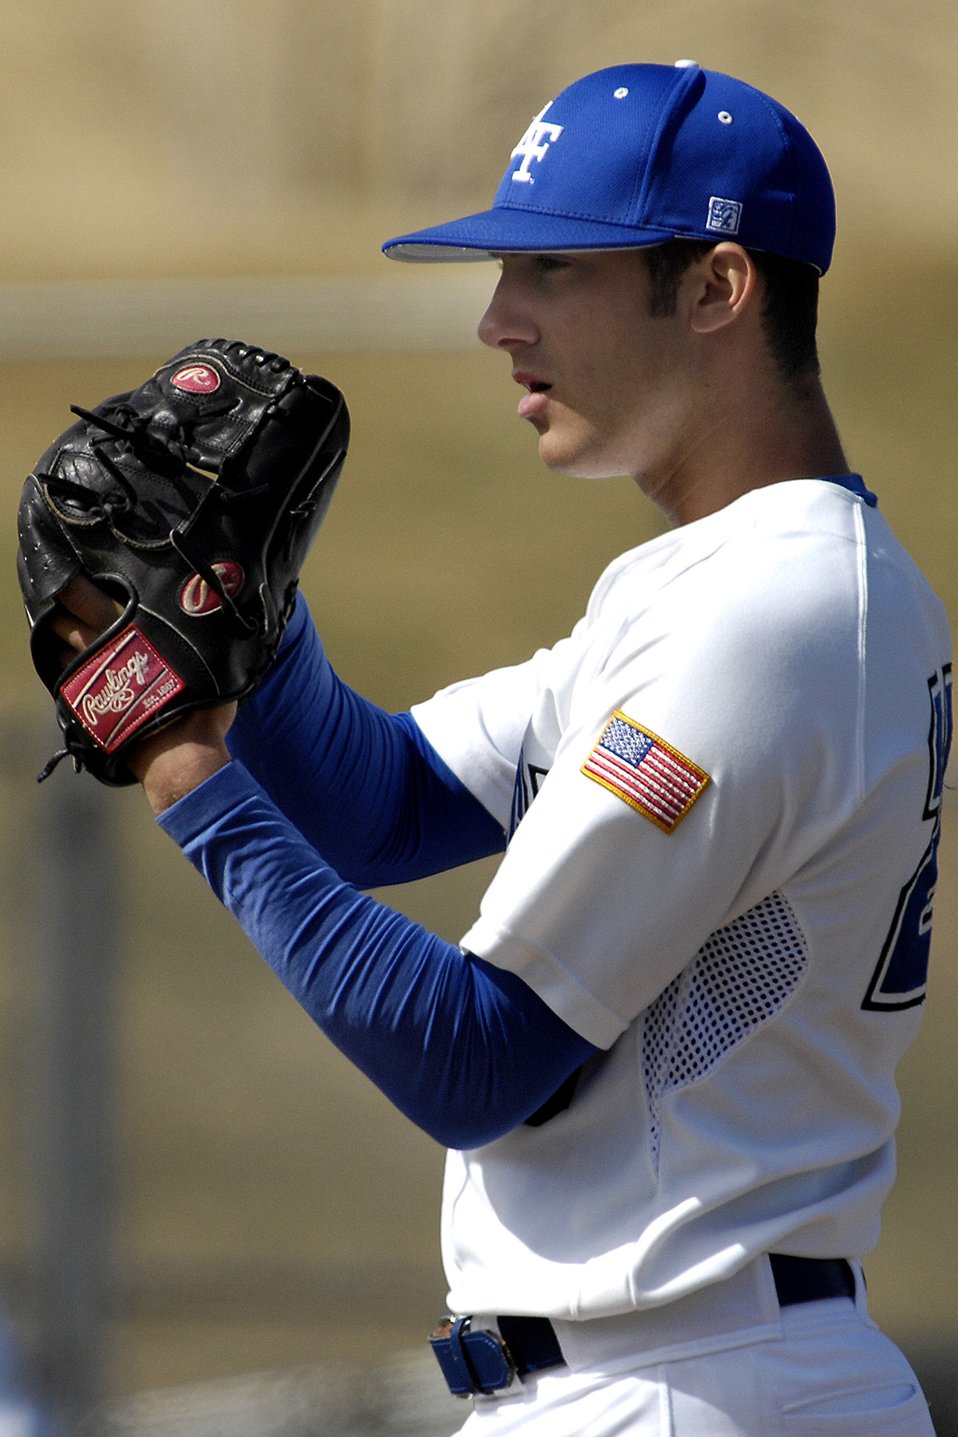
Air Force Rallies To 10th Inning Win Over Colorado Christian

Freshman pitcher Matt Barattino delivers a pitch as the Falcons rallied to a 10th inning 9-8 win against Colorado Christian in non conference baseball action at the Academy's Falcon Field. Barattino went four innings, allowing four runs. Air Force had 12 hits and did not commit an error in the field on the day. The Falcons improve to 11-19 on the season.